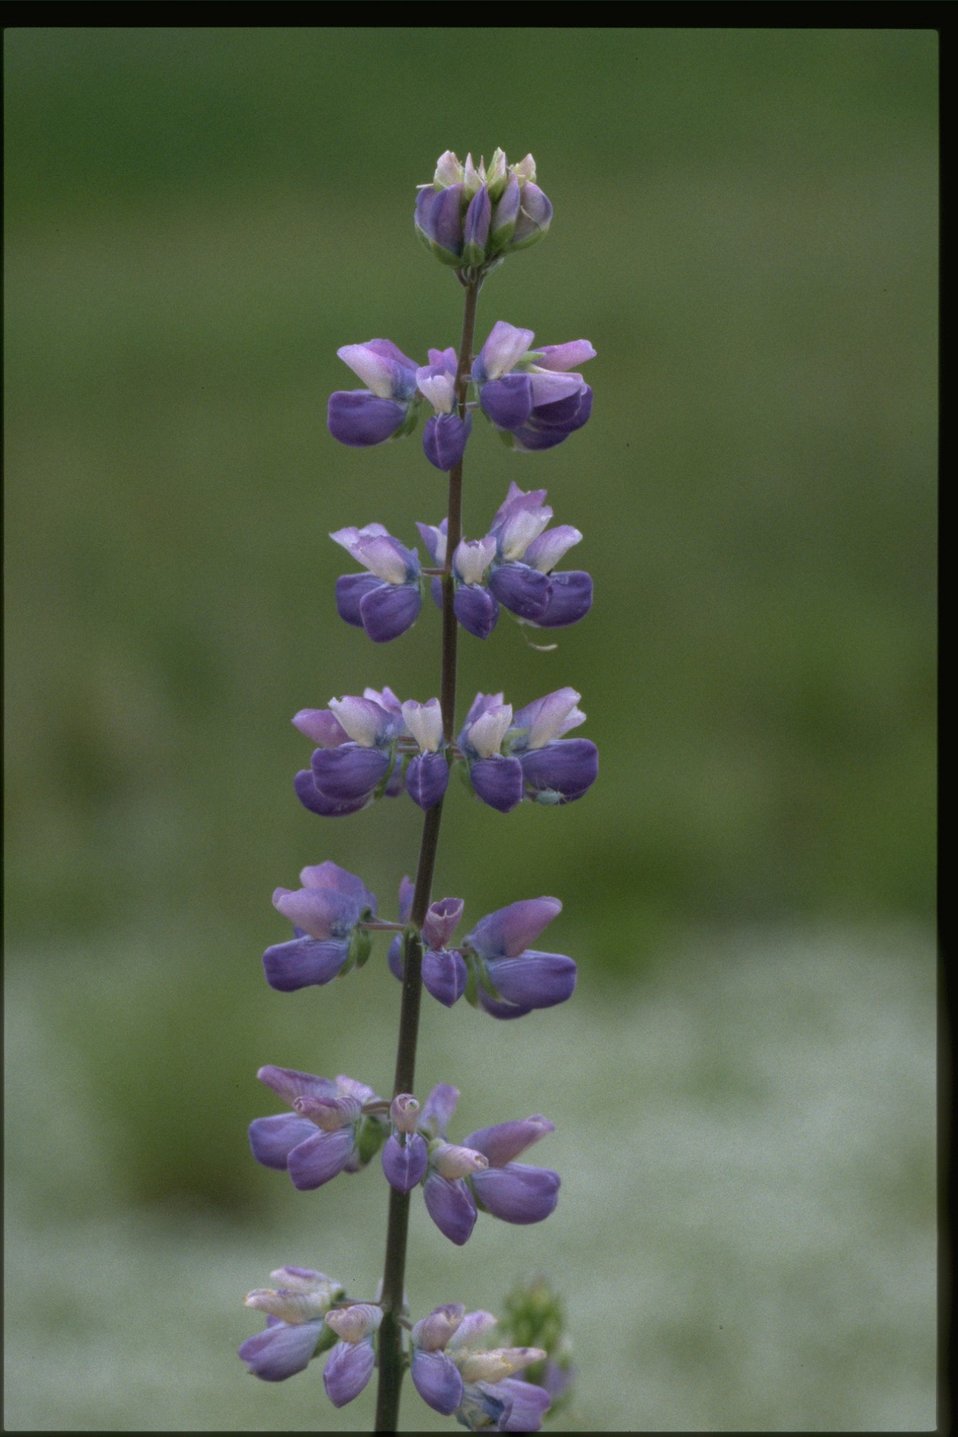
Closeup shot of lupine wildflower (Lupinus arcticus).